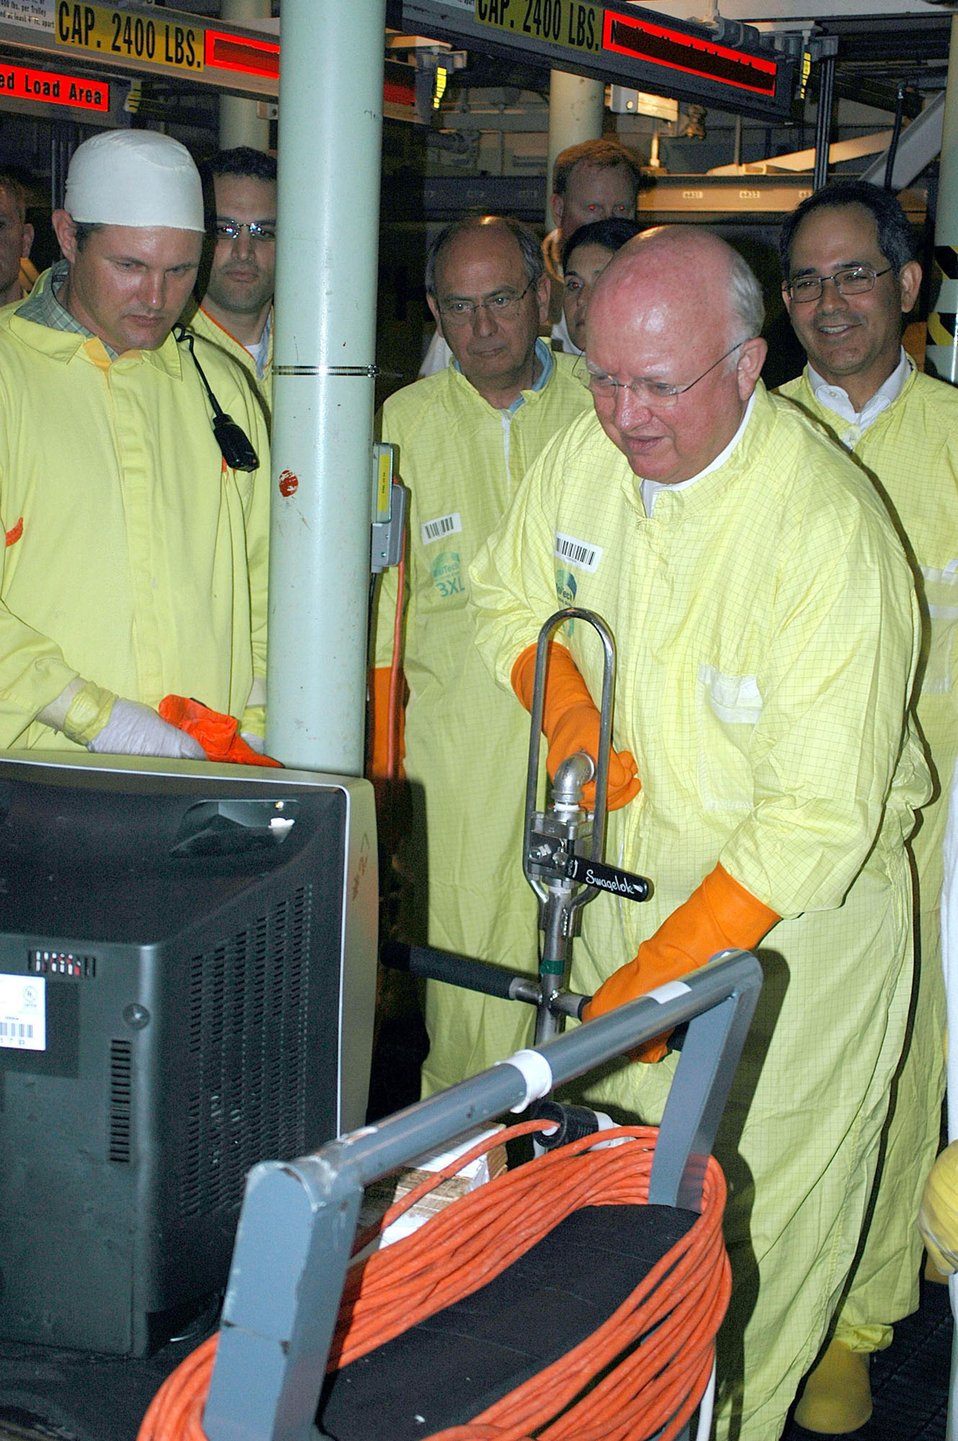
Energy Secretary Samuel Bodman views screen to see remote manipulation of equipment in opaque sludge at the Plutonium Finishing Plant (PFP).

During his visit to the PFP on June 2, 2005, Secretary Bodman watched the cleanout works in the tanks under the 241-Z Waste Treatment Facility as well as decontaminating and decommissioning PFP and storing plutonium.